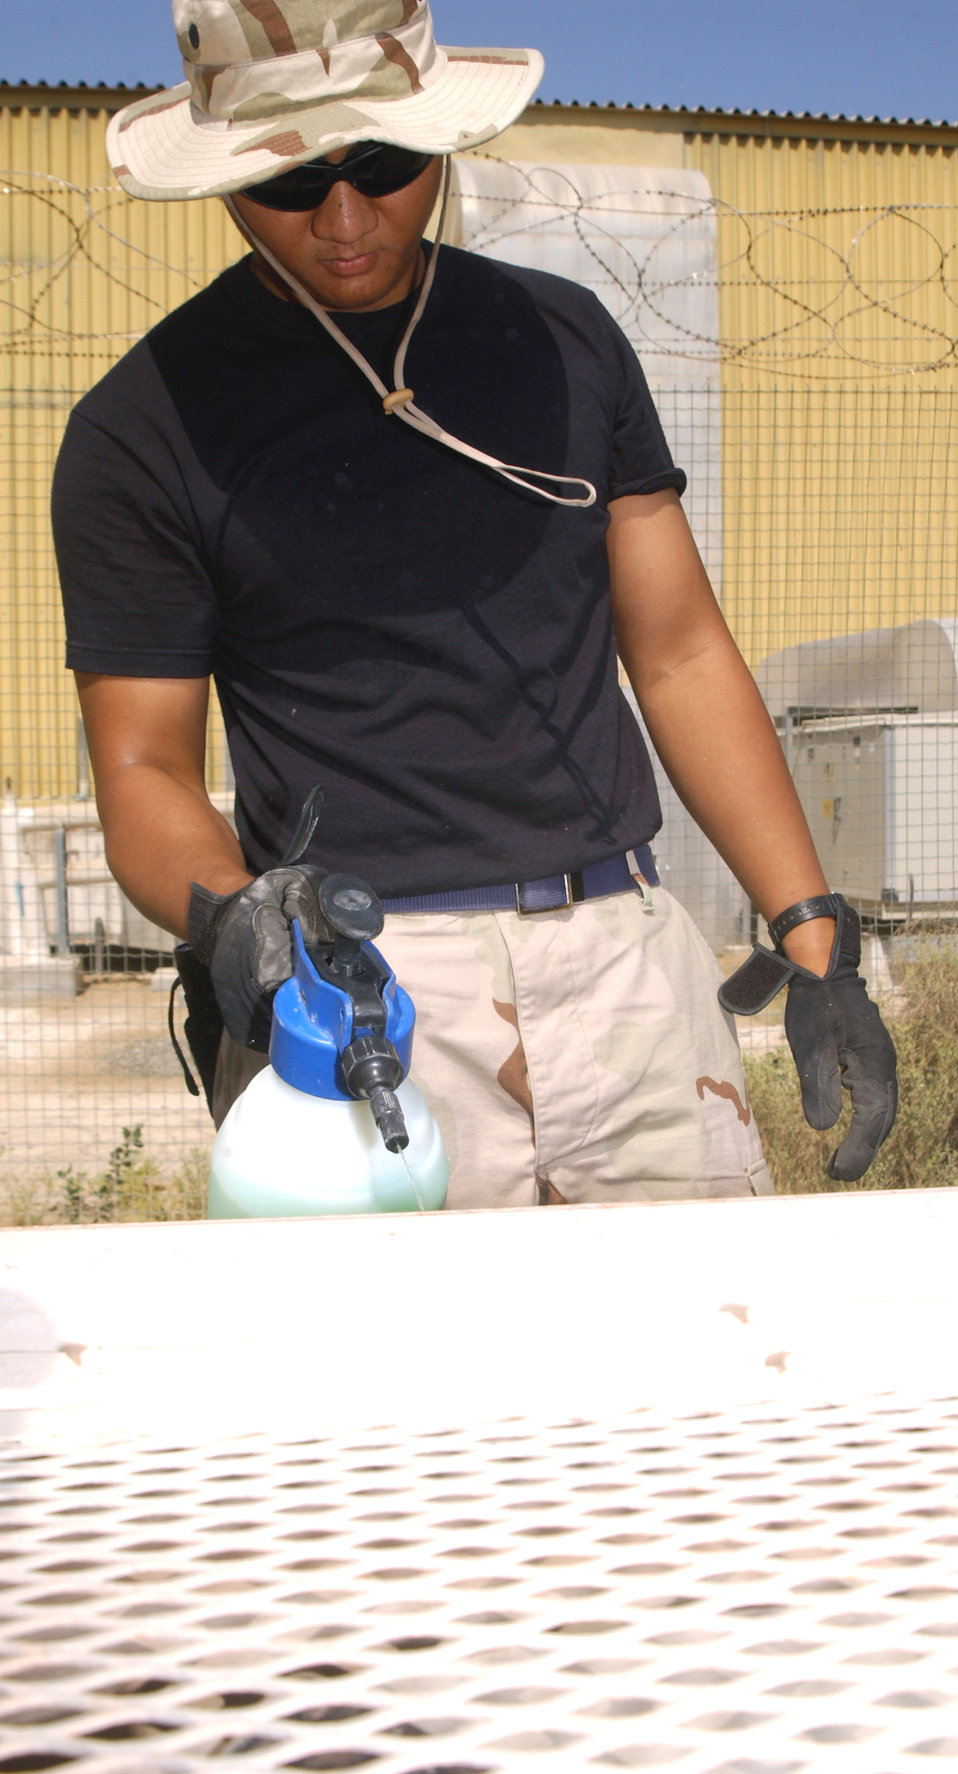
Keeping it cool

Staff Sgt. Ramir Manaloto sprays hydrochloric acid onto the coils of an air-conditioning unit outside one of the dining facilities of this deployed location in Southwest Asia Oct. 11. The acid cleans sand, grit and debris from the unit's coils, which are much like that of an automobile radiator. There are better than 3,000 air-conditioning units at this base, which is home to about 1,500 Airmen and the 380th Air Expeditionary Wing. Sergeant Manaloto is assigned to the 380th Expeditionary Civil Engineer Squadron and deployed from Yokota Air Base, Japan.